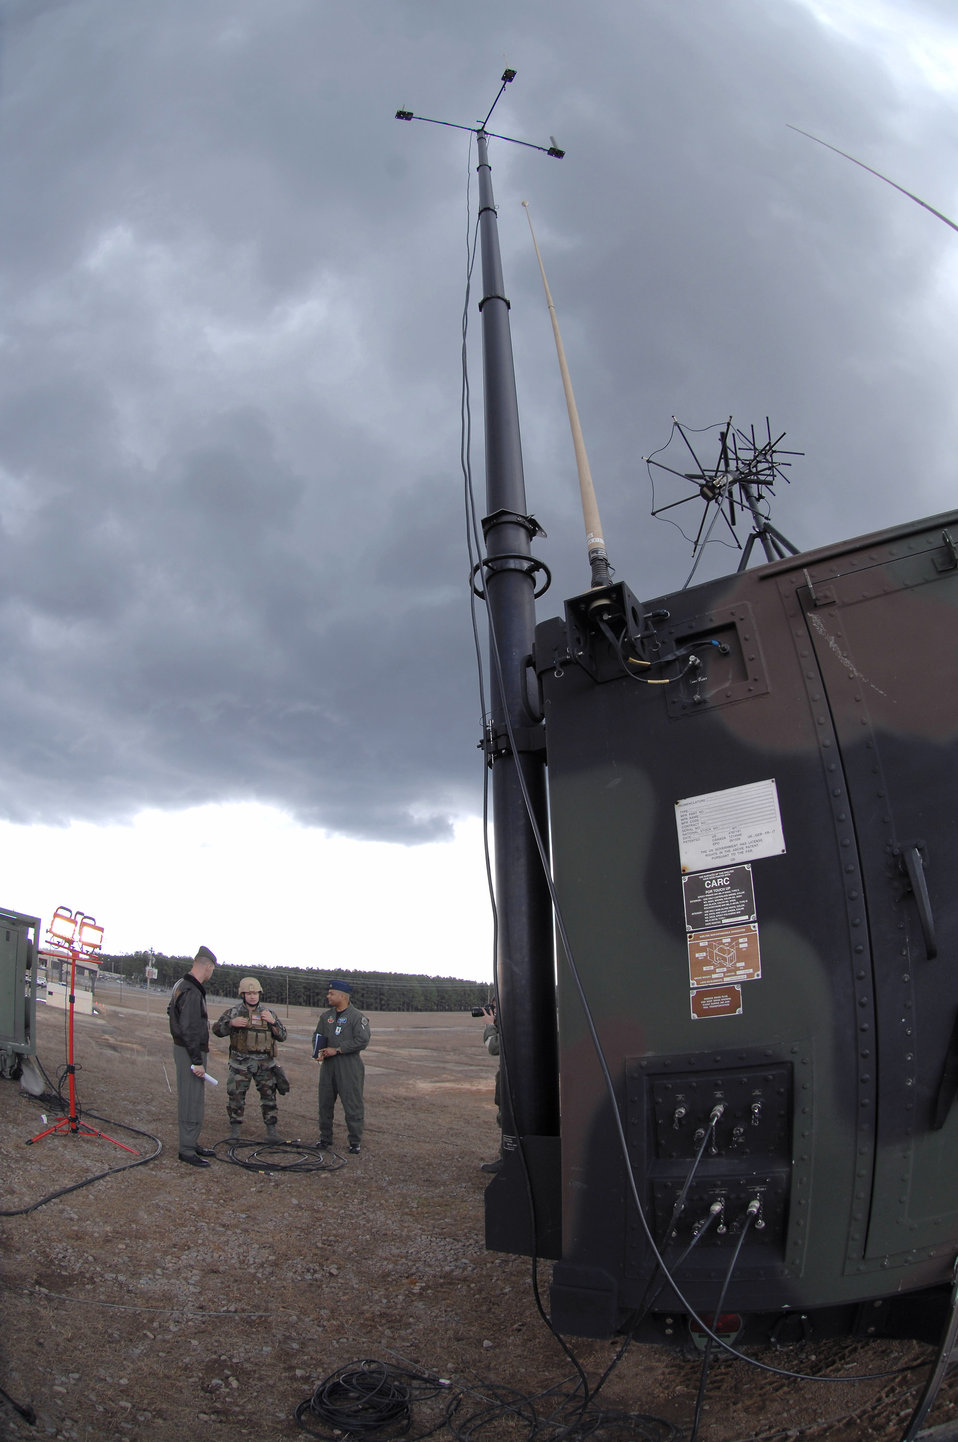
682nd ASOS performs final tests on 'Gateway'

Staff Sgt. Justin Cremer (middle) briefs Marine Corps Lt. Col. Robert Cooper (left) and Maj. Darren Gray on the Air Support Operations Center Gateway Feb. 13 at Shaw Air Force Base, S.C. The Gateway, a vehicle mounted communications system, is going through its final tests during an operational readiness exercise before it will be used in theater operations. Sergeant Cremer is the 682nd Air Support Operations Squadron operations training manager, Colonel Cooper is the 609th Combat Operations Squadron U.S. Central Forces weapons officer and Major Gray is the 609th Combat Plans Squadron special assistant to U.S. Central Forces commander.